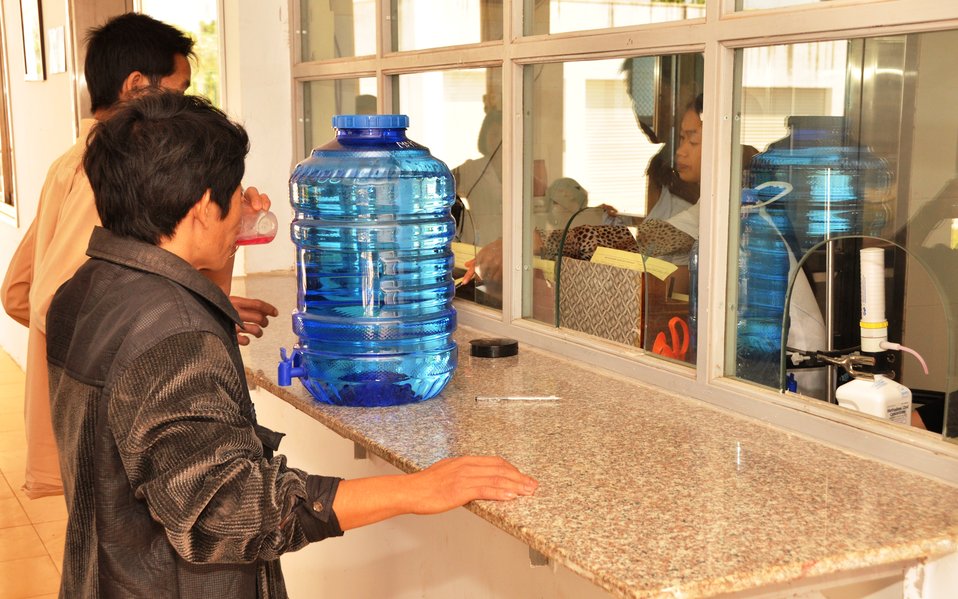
Patients receive methadone treatment in Dien Bien